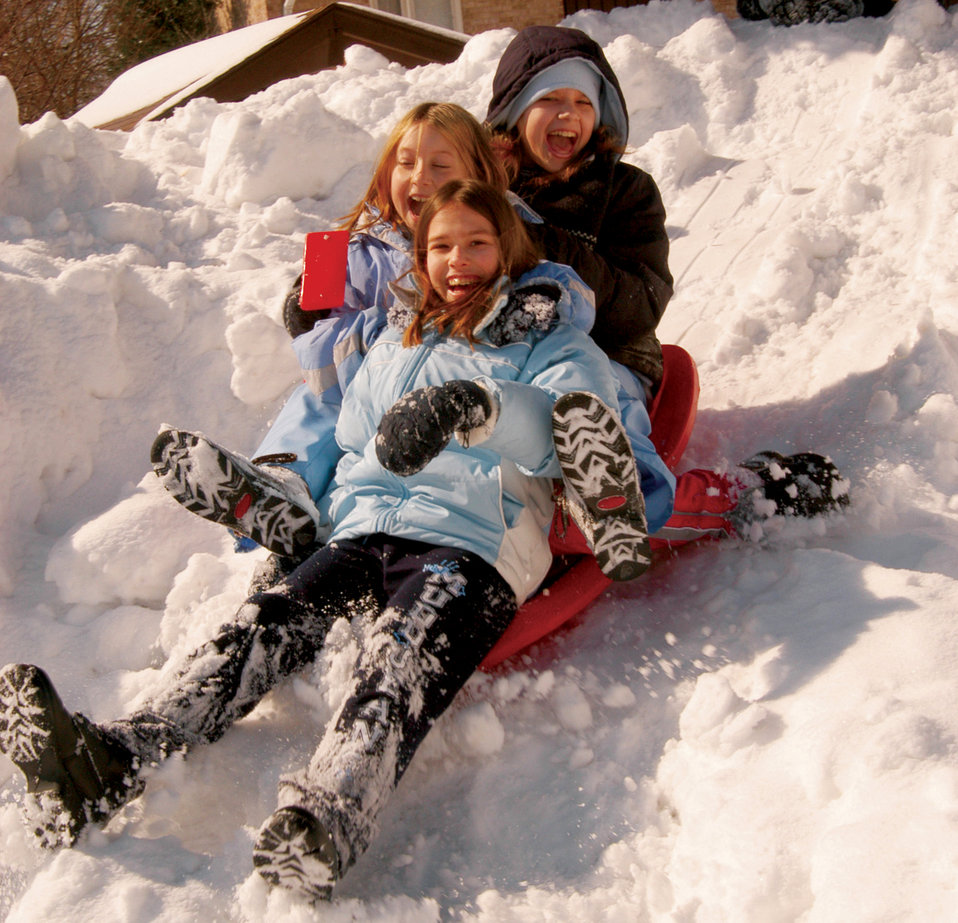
Snow daze

ANDREWS AIR FORCE BASE, Md. (AFPN) -- Megan Harmon (front) and Ashlea and Desiree Nasir sled down a snow mound in their neighborhood here Feb. 18. Megan, 11, is the daughter of Capt. Michelle Harmon from the base's 89th Medical Group, and Ashlea, 10, and Desiree, 12, are the daughters of 2nd Lt. Javed Nasir assigned to Uniformed Services of Health Sciences at Bethesda, Md.